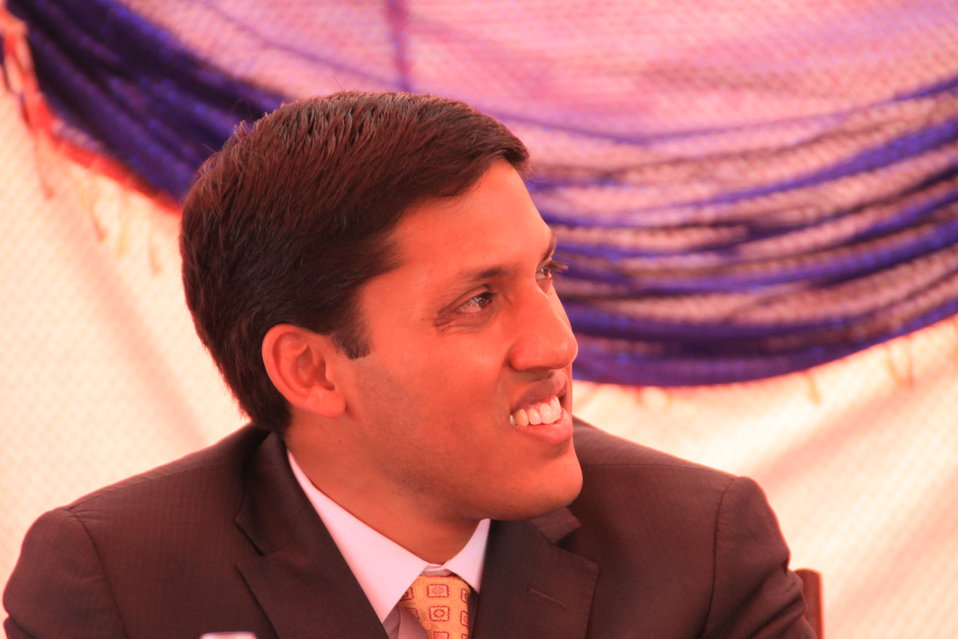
Badam Bagh Farm